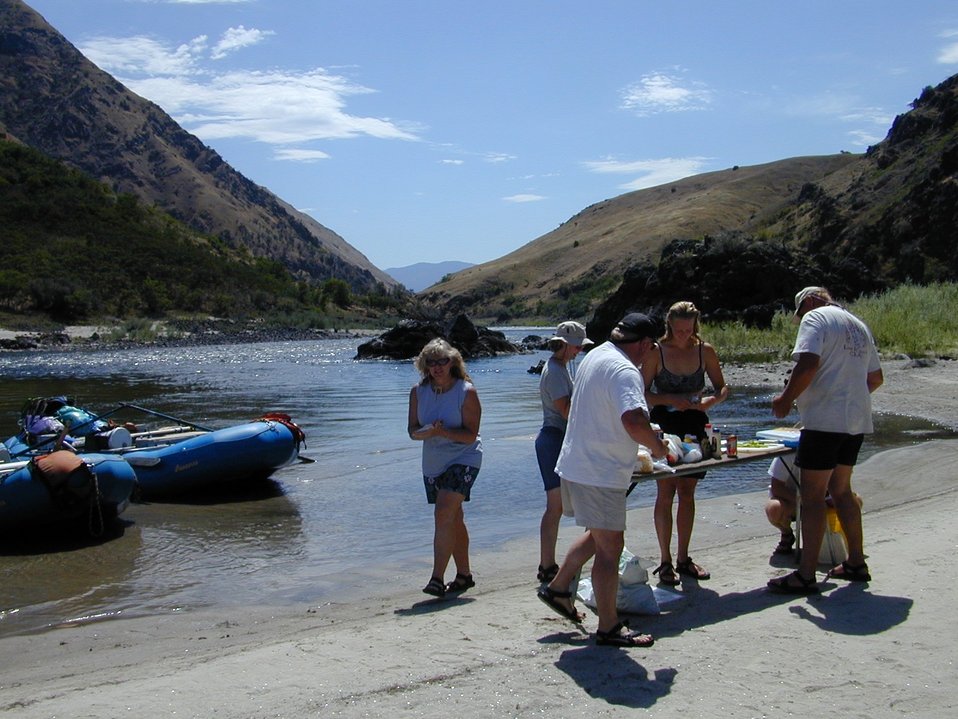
Recreation Rafting on Lower Salmon River Cottonwood Field Office UCSC Upper Columbia Salmon Clearwater District